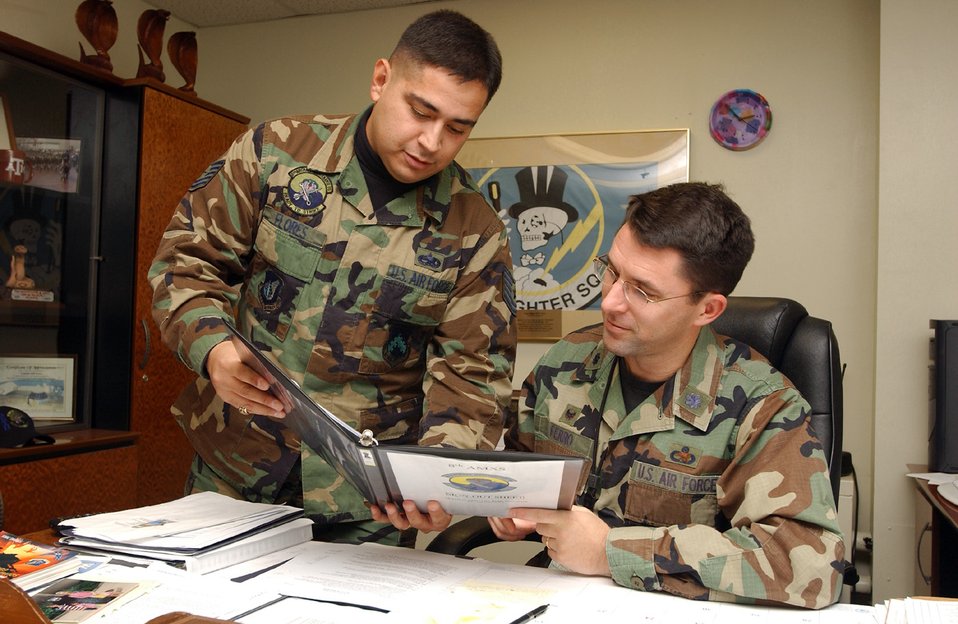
Degrees

KUNSAN AIR BASE, South Korea (AFPN) -- Lt. Col. William Ferro, 8th Aircraft Maintenance Squadron commander, right, reviews a technical order with Tech. Sgt. Rodolfo